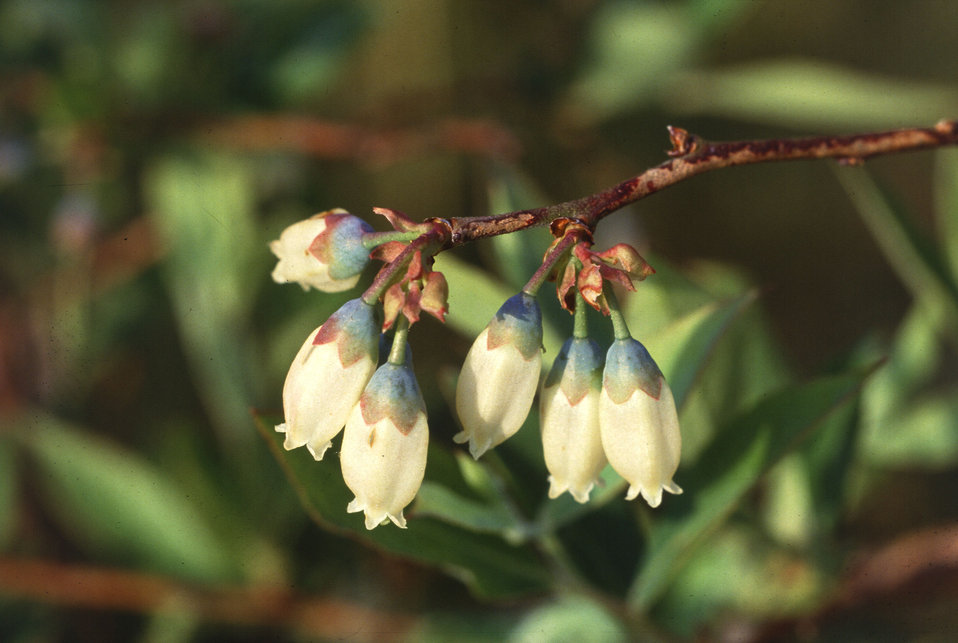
The flowers of this blueberry plant will become sweet tasting fruit as they mature. Depending on local conditions such as altitude and latitude, the mature fruit can be harvested between May through August.